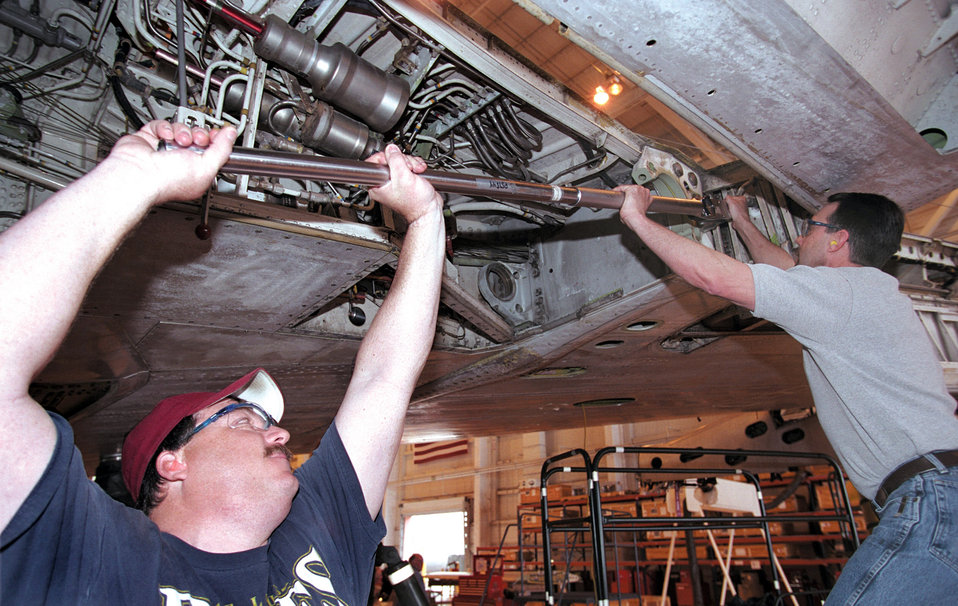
Corrosion control

TINKER AIR FORCE BASE, Okla. -- Jerry Byke (left) and Steve LaPlume loosen main landing gear trunnion bolts so the men can inspect for corrosion. Mr. Byke is a hydraulics aircraft mechanic, and Mr. LaPlume is a flight controls aircraft mechanic.